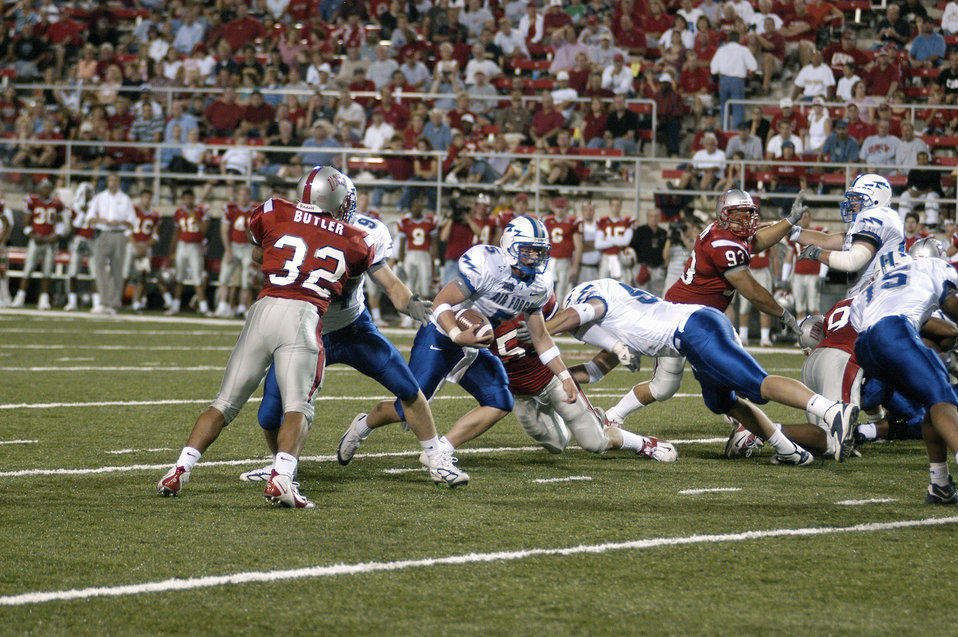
Falcons defeat UNLV, 27-10

LAS VEGAS -- Air Force Academy quarterback Shaun Carney heads upfield on one of his 11 carries for 58 yards during the Falcon's 27-10 victory over University of Nevada-Las Vegas in their Sept. 18 conference opener. The Falcons next play No. 15 Utah on Sept. 25.